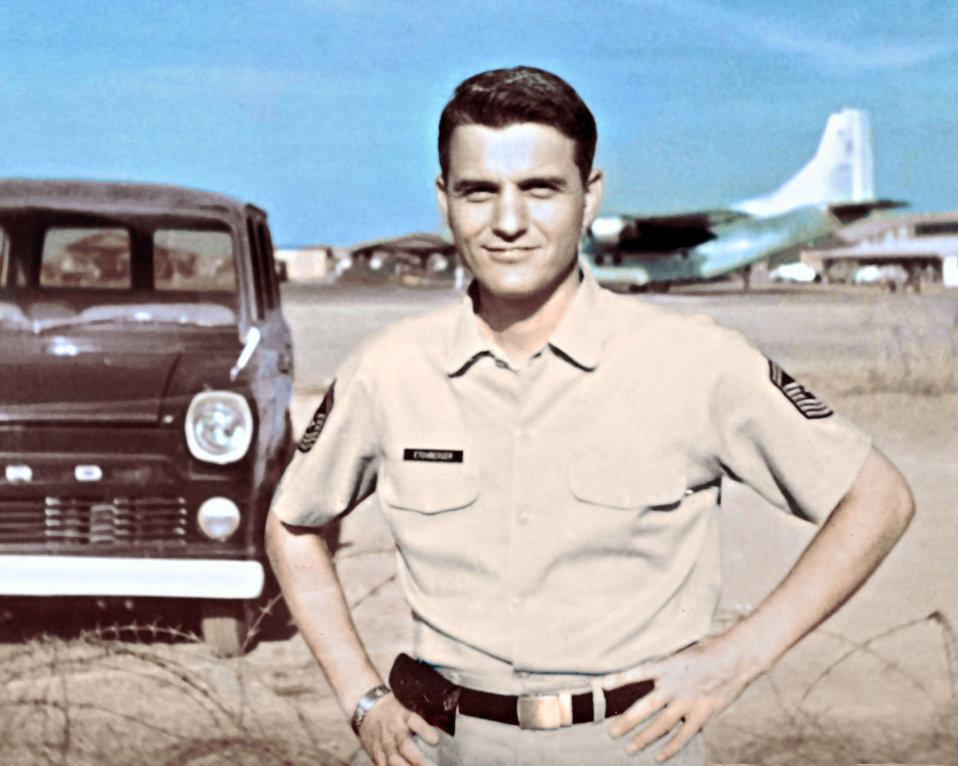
Airman to receive Medal of Honor for '68 actions

Chief Master Sgt. Richard L.